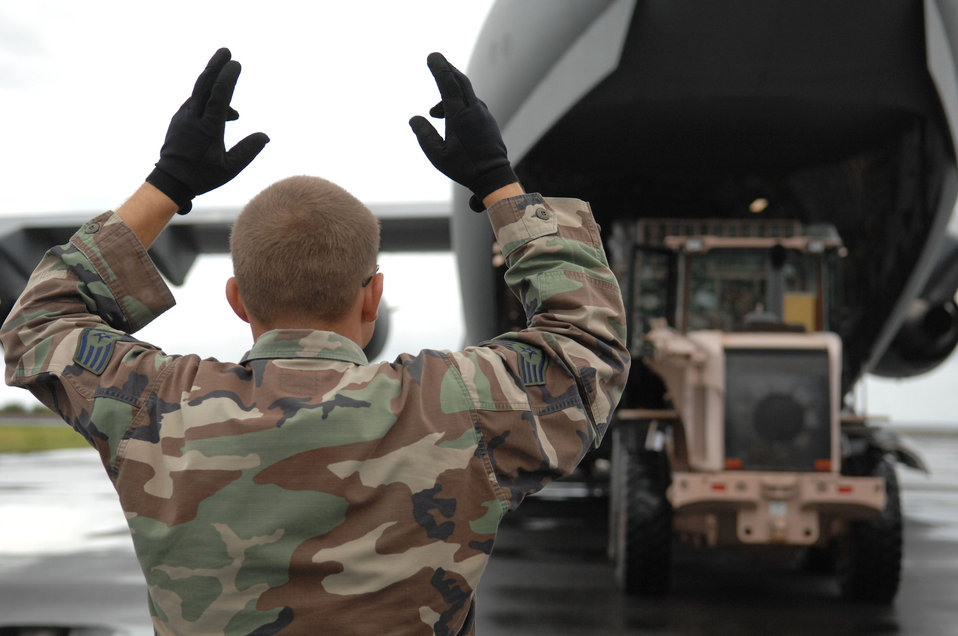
Air Force humanitarian team arrives on Chuuk

Staff Sgt. Christopher West marshals an arriving C-17 Globemaster III Sept. 2, 2009 at the Chuuk International Airport on Weno Island, Chuuk, in the Federated States of Micronesia, during the Humanitarian Assistance Rapid Response Team validation exercise. The HARRT is the Air Force's new expeditionary medical capability designed to deploy within 24 hours of notice during disaster relief operations. Sergeant West is assigned to the 36th Contingency Response Group at Andersen Air Force Base, Guam.